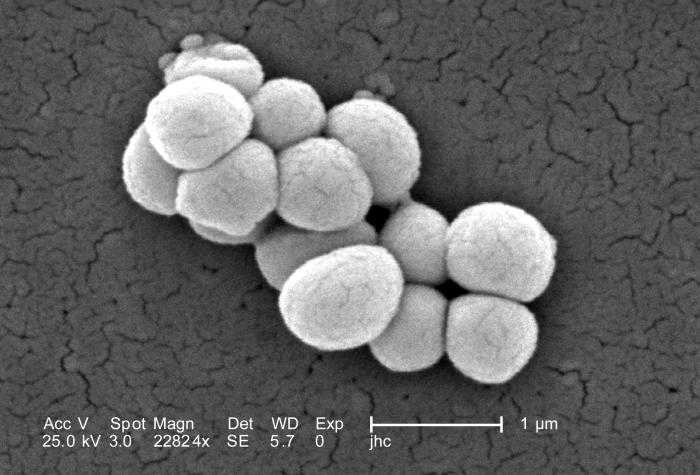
Under a very high magnification of 22824x, this scanning electron micrograph (SEM) depicted some of the ultrastructural morphologic features displayed by this group of Gram-positive Micrococcus luteus bacteria. The specimen was obtained from a pure culture that was raised on a polycarbonate filter, for the purpose of identification of the organism.